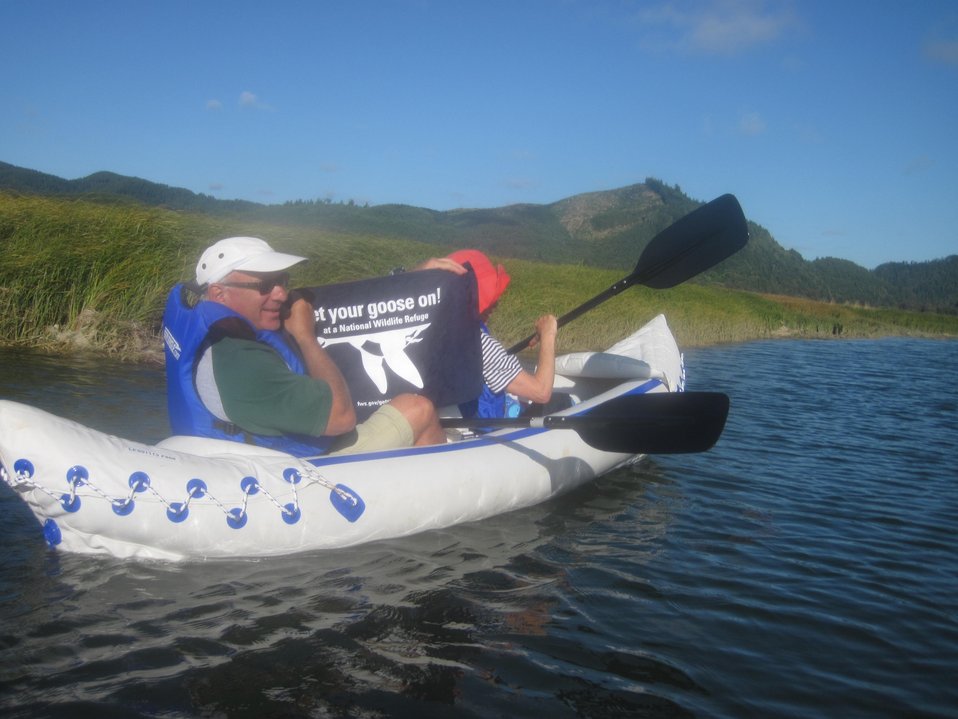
Get Your Goose On! - Siletz Bay Style

GYGO during a relaxing paddle trip!